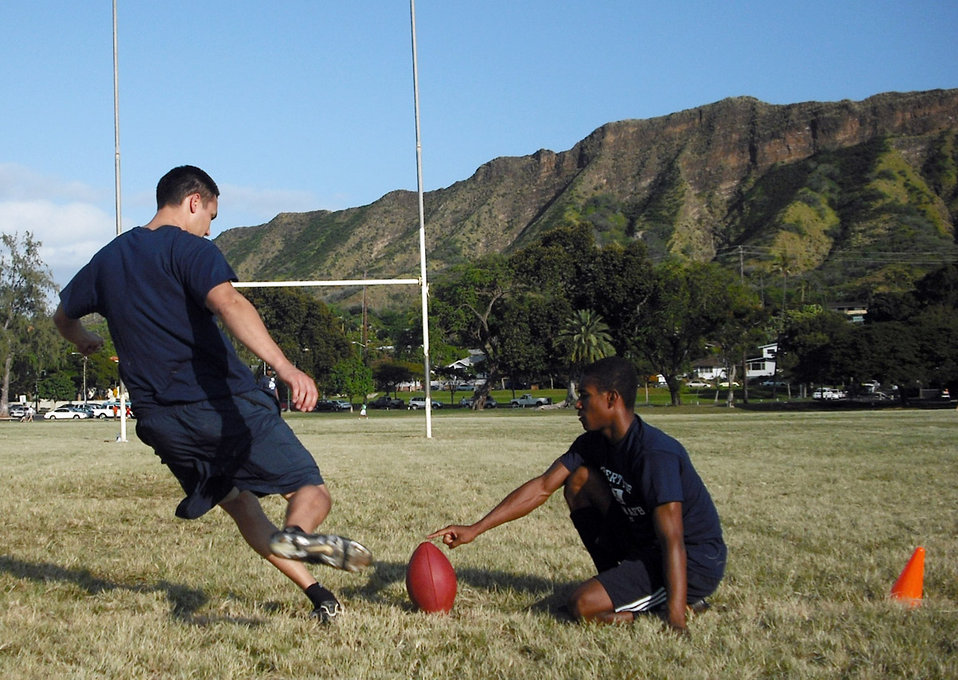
NFL Military Challenge

With Oahu's Diamond Head as the backdrop, 1st Lt. Mike Maynard prepares to make one of his nine field goals Feb. 7 during the NFL Military Challenge in Hawaii. Lieutenant Maynard garnered second place in the competition, helping the Air Force win the NFL Military Challenge for the fourth consecutive year. Senior Airman Winston Jackson, who helped the Air Force capture first place in three other competitions, was the holder.